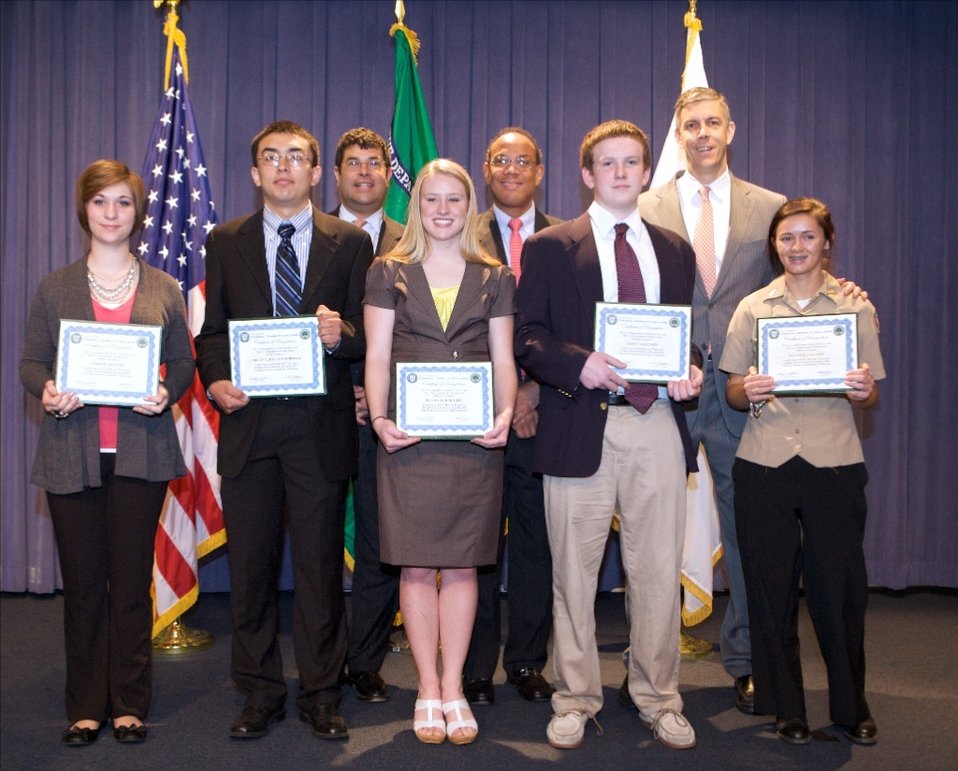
Education, Treasury Recognize High-Scoring Students in the 2010-11 National Financial Capability Challenge

As part of an ongoing effort to mark national Financial Literacy Month, Education Secretary Arne Duncan and Treasury Deputy Secretary Neal Wolin recognized high-scoring students in the National Financial Capability Challenge on Thursday, April 21, 2011 at an awards ceremony in Washington D.C.